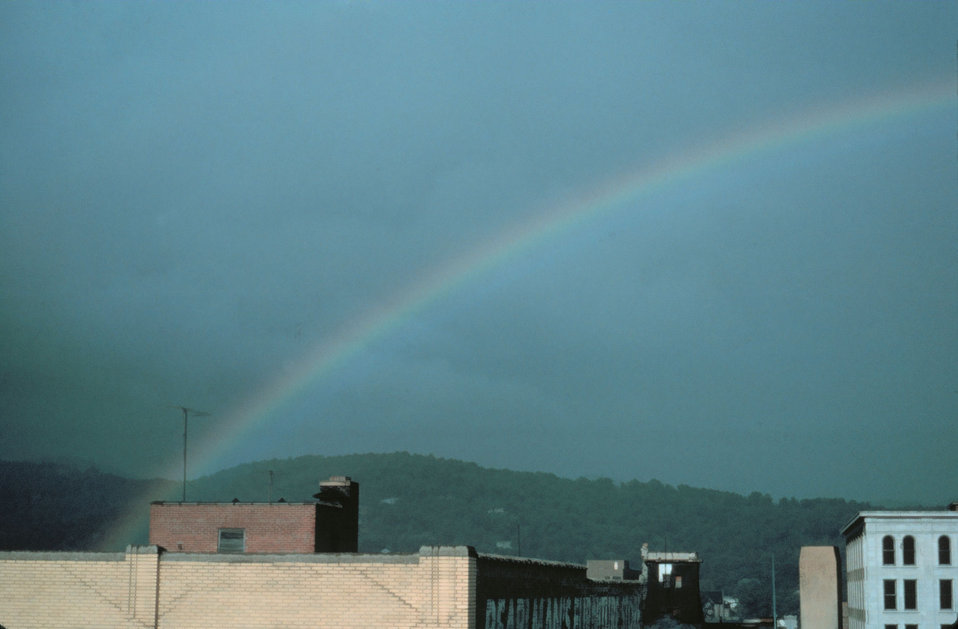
Left half of rainbow